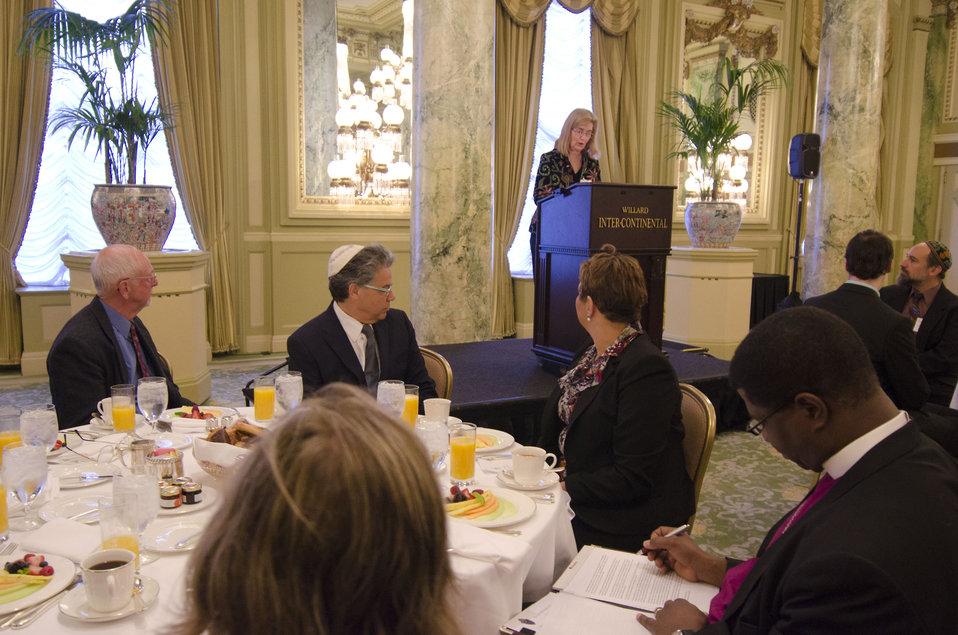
2011-05-05 NRCCCPrayerBreakfast 011

Rev. Susan Chamberlain, Orange County Interfaith Coalition on the Environment gives remarks at the National Religious Coalition on Creation Care Prayer Breakfast